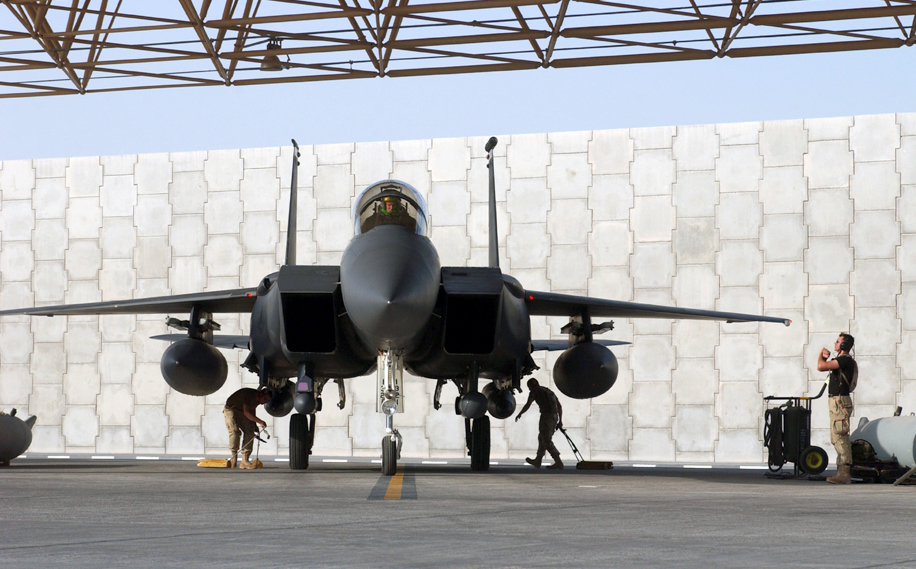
The Strike Eagle has landed

OPERATION IRAQI FREEDOM -- Airmen from the 494th Fighter Squadron at Royal Air Force Lakenheath, England, meet an F-15E Strike Eagle after it arrives at a forward-deployed location in Southwest Asia.